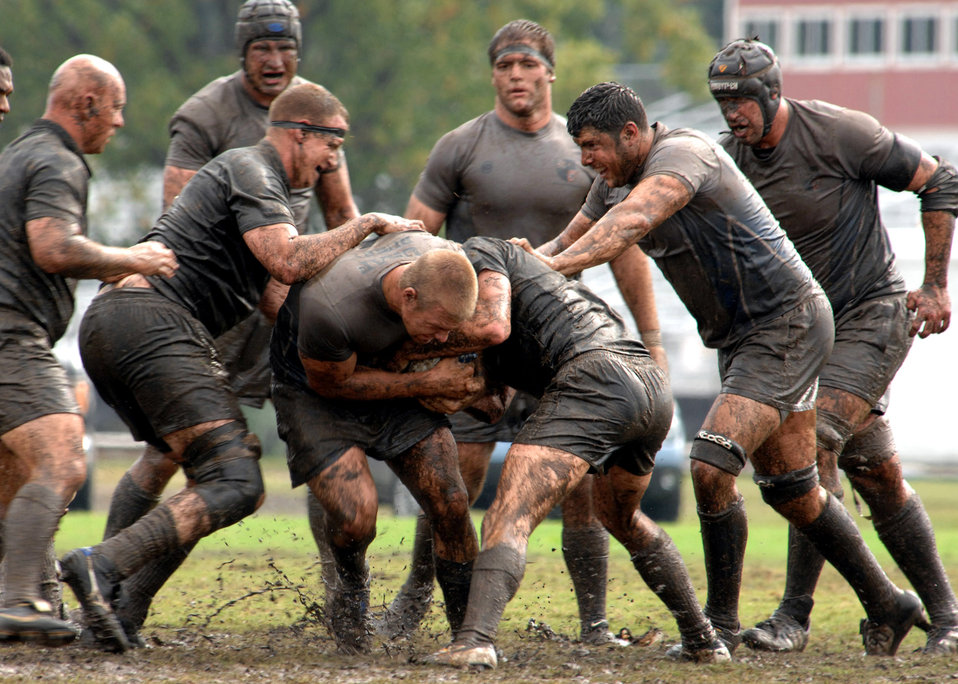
Air Force triumphs over Army

Air Force rugby player Ryan Dombrock is tackled while his teammates prepare to ruck the defenders during the 2007 Armed Forces Rugby Tournament Oct. 27 at Marine Corps Base Camp Lejeune, N.C. Air Force defeated the Army 22-5 for a fourth consecutive championship victory.